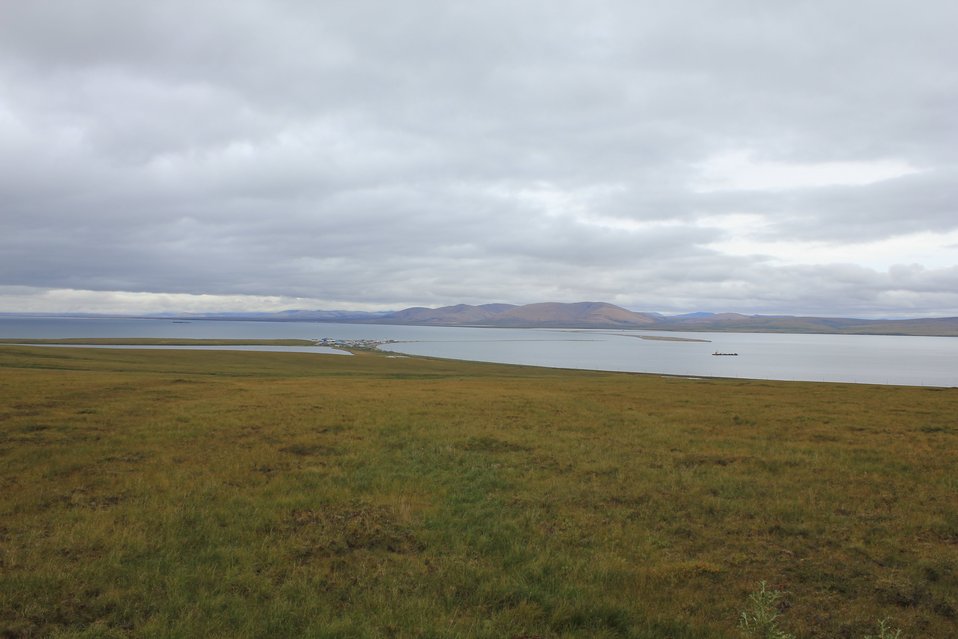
A view of Teller. The lake to the left is a saline lagoon. Articulated tugs are both in Port Clarence and in the Inner Bay. Photo #2 of sequence.